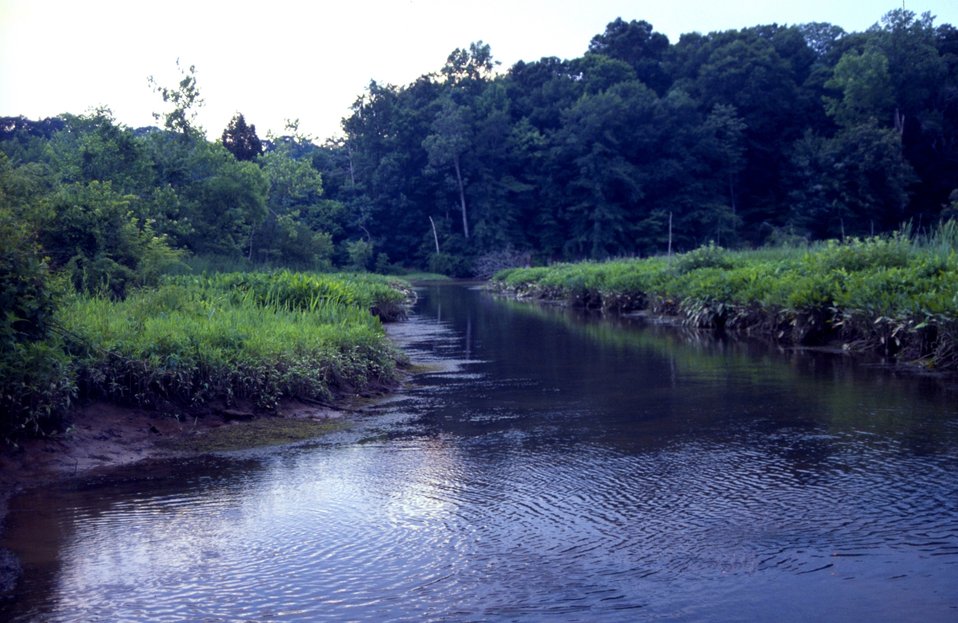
Tidal wetlands at low tide along a branch of the Patuxent River